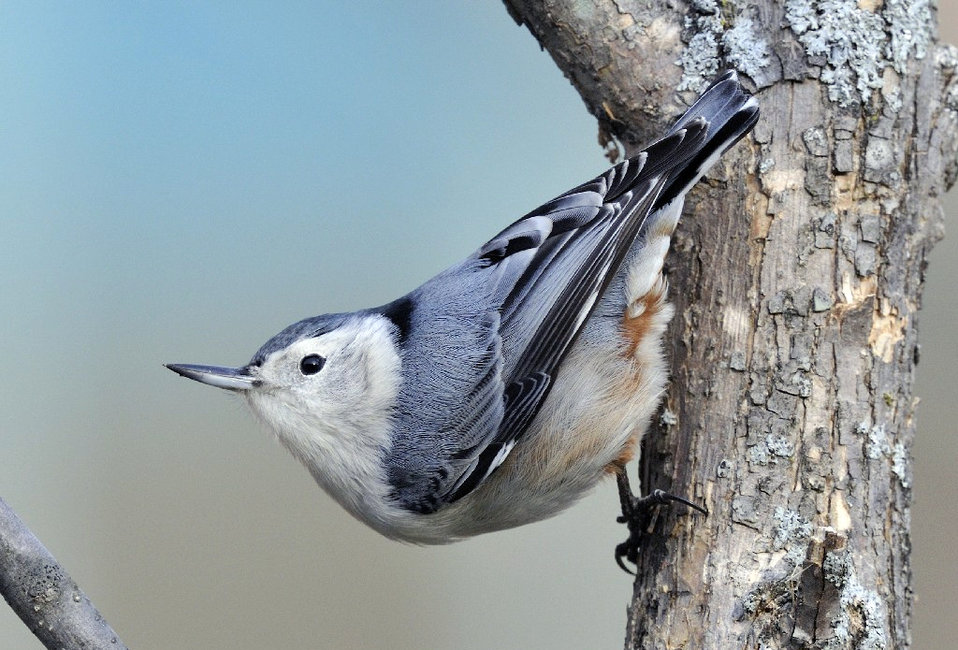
Photo of the Week - White-breasted Nuthatch (MA)

Photo of the Week - 2/13/12

White-breasted nuthatch photographed in Hadley, Massachusetts.